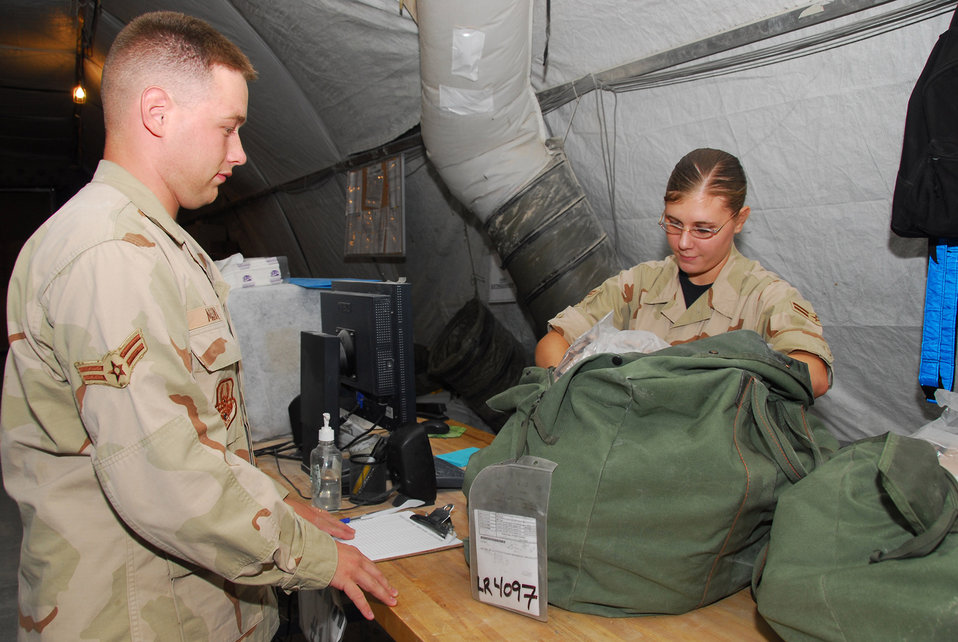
Expeditionary Theater Deployment Center equips transient Airmen

Airmen 1st Class Vanessa Fisher and Ryan Mason scan equipment in a C bag Sept. 1 in Southwest Asia. The process effectively holds Airmen accountable for the equipment while they're deployed. The Airmen are assigned to the 379th Expeditionary Logistics Readiness Squadron Expeditionary Theater Distribution Center.